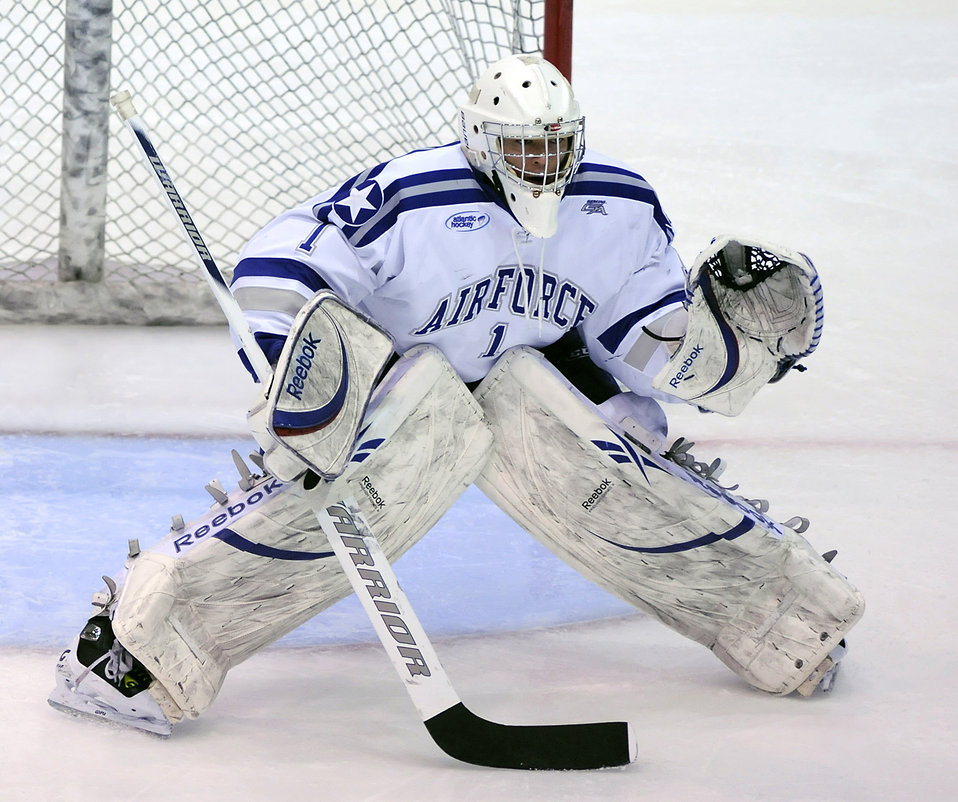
No goals here

In his last regular-season game, Falcon senior goalie Andrew Volkening guards the goal as the Falcons beat the Sacred Heart Pioneers 8-1 at the U.S. Air Force Academy's Cadet Ice Arena Feb. 27, 2010. The victory clinched third place in the Atlantic Hockey Association, improving to 14-14-6 overall and 14-8-6 in the AHA.